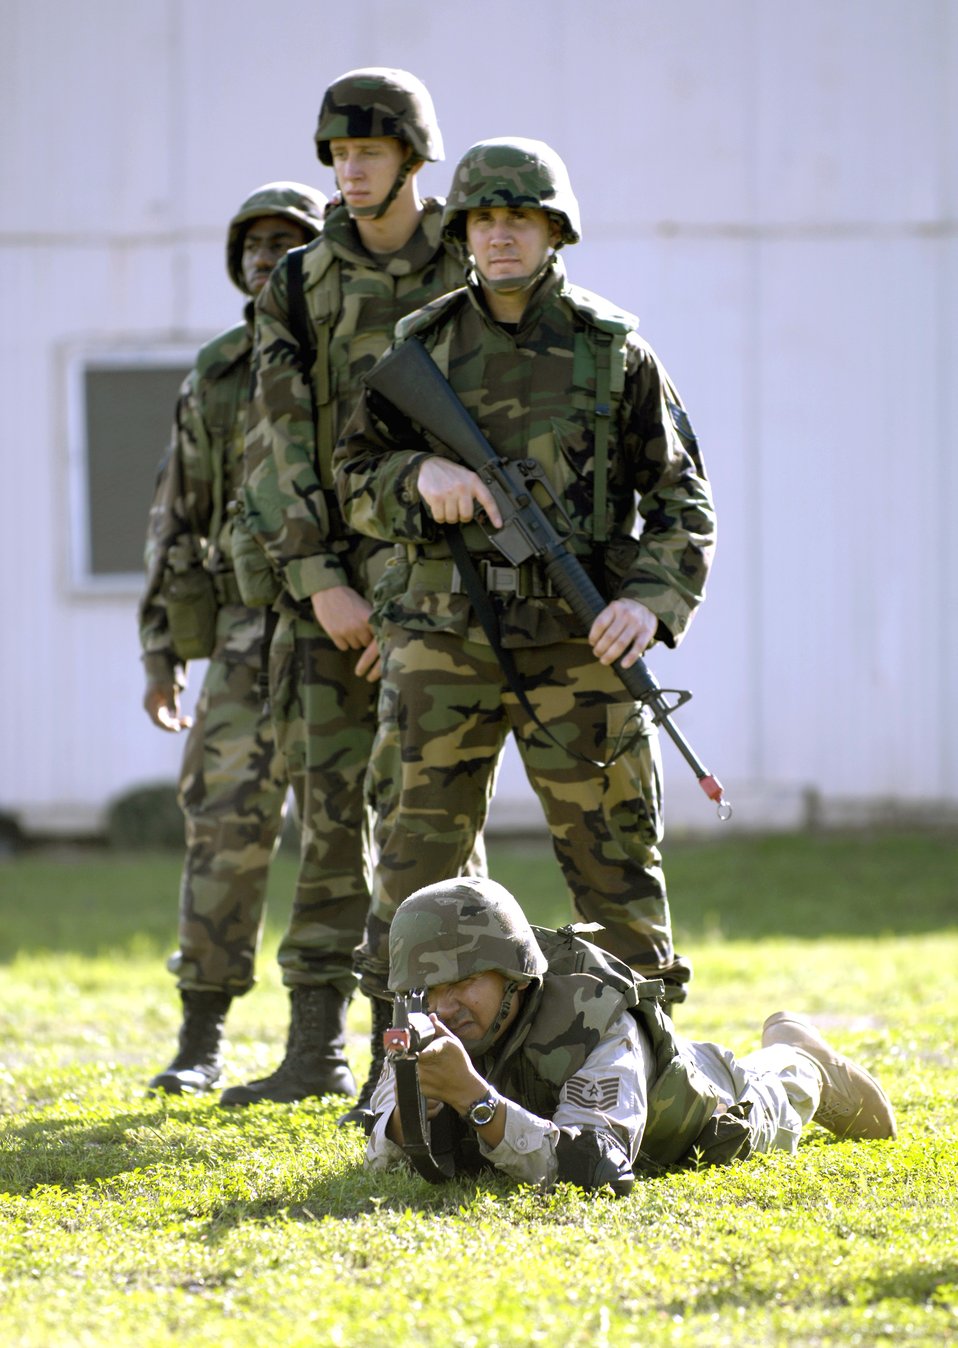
Combat course prepares Airmen for AEF

Airmen from the 15th Airlift Wing practice their individual movement techniquesNov. 3 during a 3-day Expeditionary Combat Skills Training course at Hickam Air Force Base, Hawaii. The Airmen are preparing for the Air Expeditionary Force 5/6 cycle.